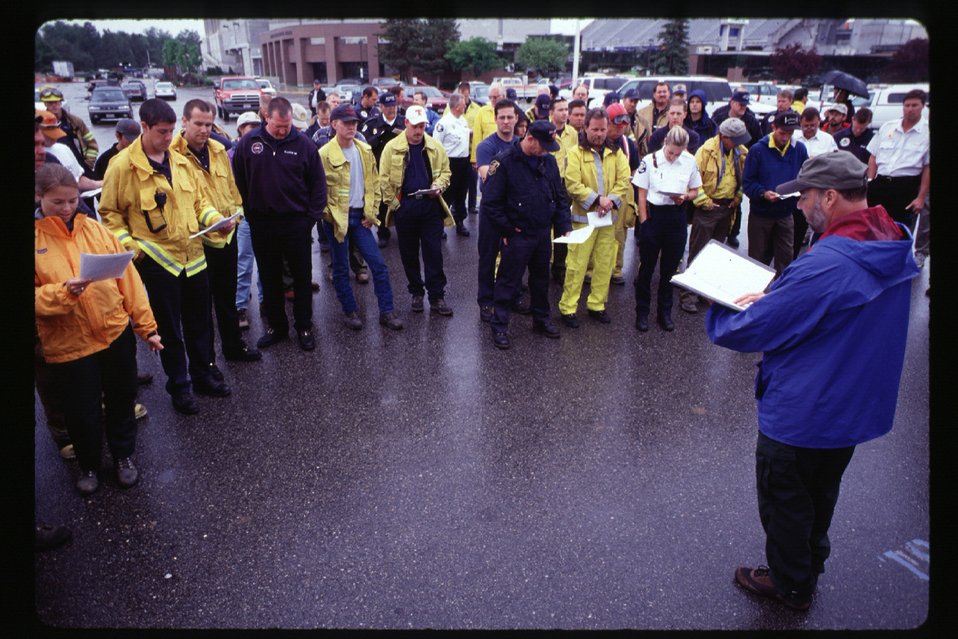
Fire fighters Four Rivers Field Office LSRD Lower Snake River District